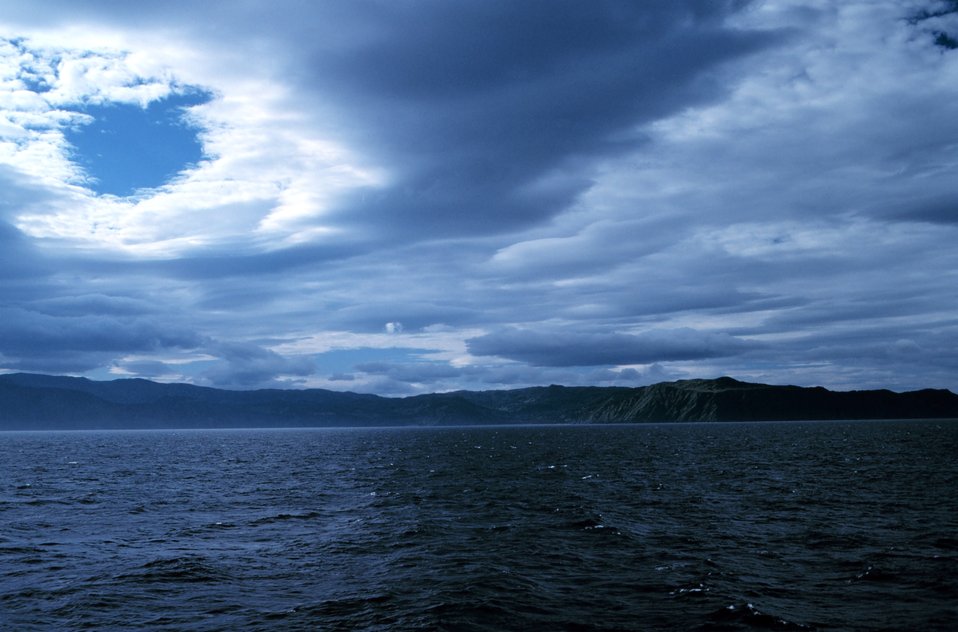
Dramatic cloud formation over the Puale Bay area of the Alaska Peninsula.